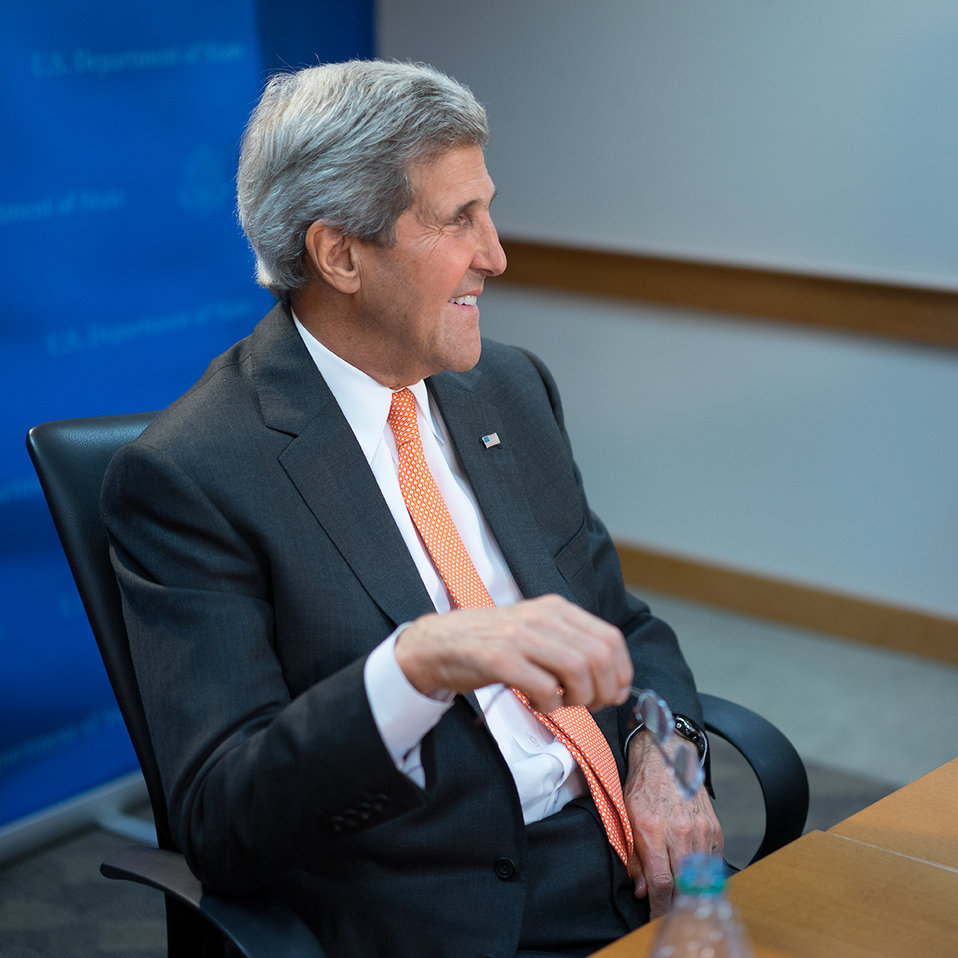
Secretary Kerry Participates in a Twitter QandA with Bill Nye

U.S. Secretary of State John Kerry participates in a Twitter Q&A with Bill Nye the Science Guy during the Our Ocean Conference on June 17, 2014.